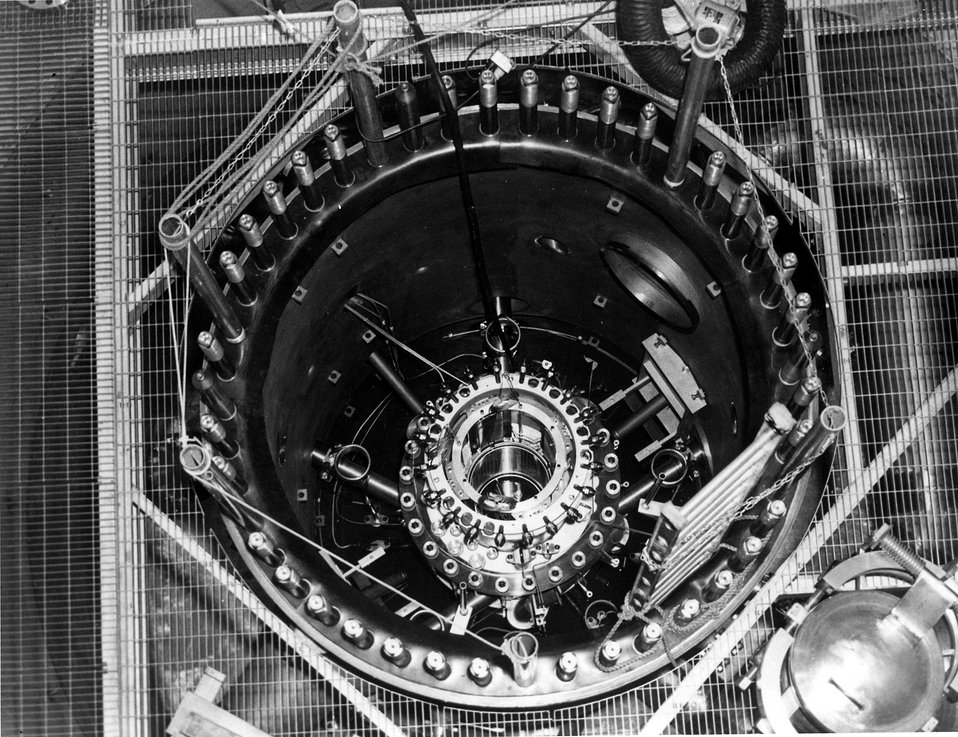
High Flux Isotope Reactor component installation. View of the installation of core components showing all components except the outer shroud flange. c. 1966